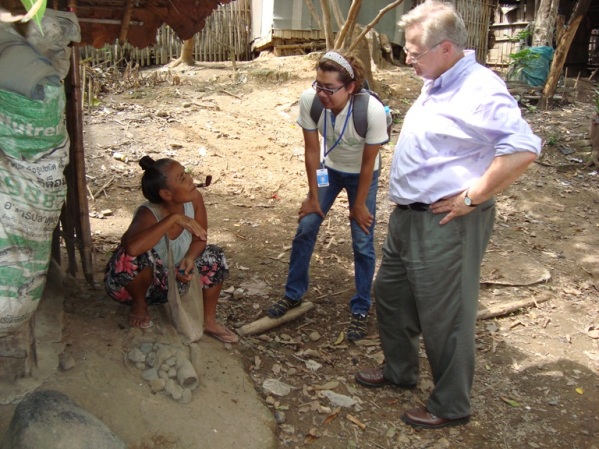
Assistant Secretary Schwartz Speaks With Talemu

U.S. Assistant Secretary of State for Population, Refugees and Migration Eric Schwartz speaks with Talemu, a 68-year old Burmese Karen, in Thailand in June 2010. Assistant Secretary for the Bureau of Population, Refugees, and Migration (PRM) Eric Schwartz visited Thailand and Laos in June to focus on the situation of Burmese ethnic minorities and Lao Hmong asylum seekers. Through PRM, the U.S. government provides financial assistance to the many organizations that are assisting these refugee populations in Thailand and Laos. Assistant Secretary Schwartz met with government officials and refugees themselves to see first-hand the challenges they face.